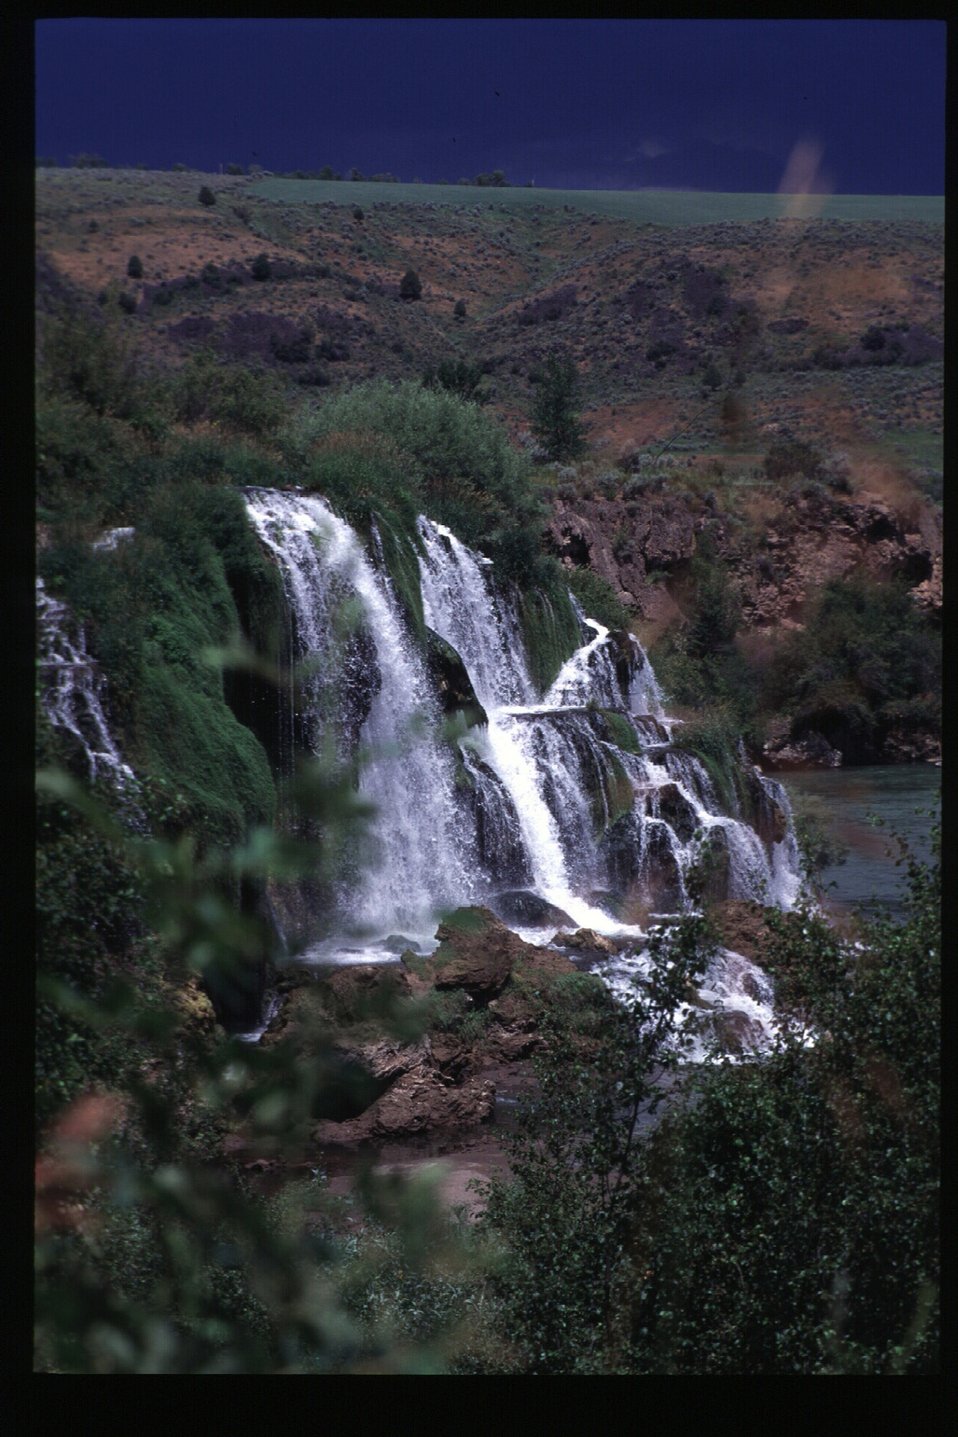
Scenic waterfall Fall Creek Falls Snake River Canyon USRD Upper Snake River District